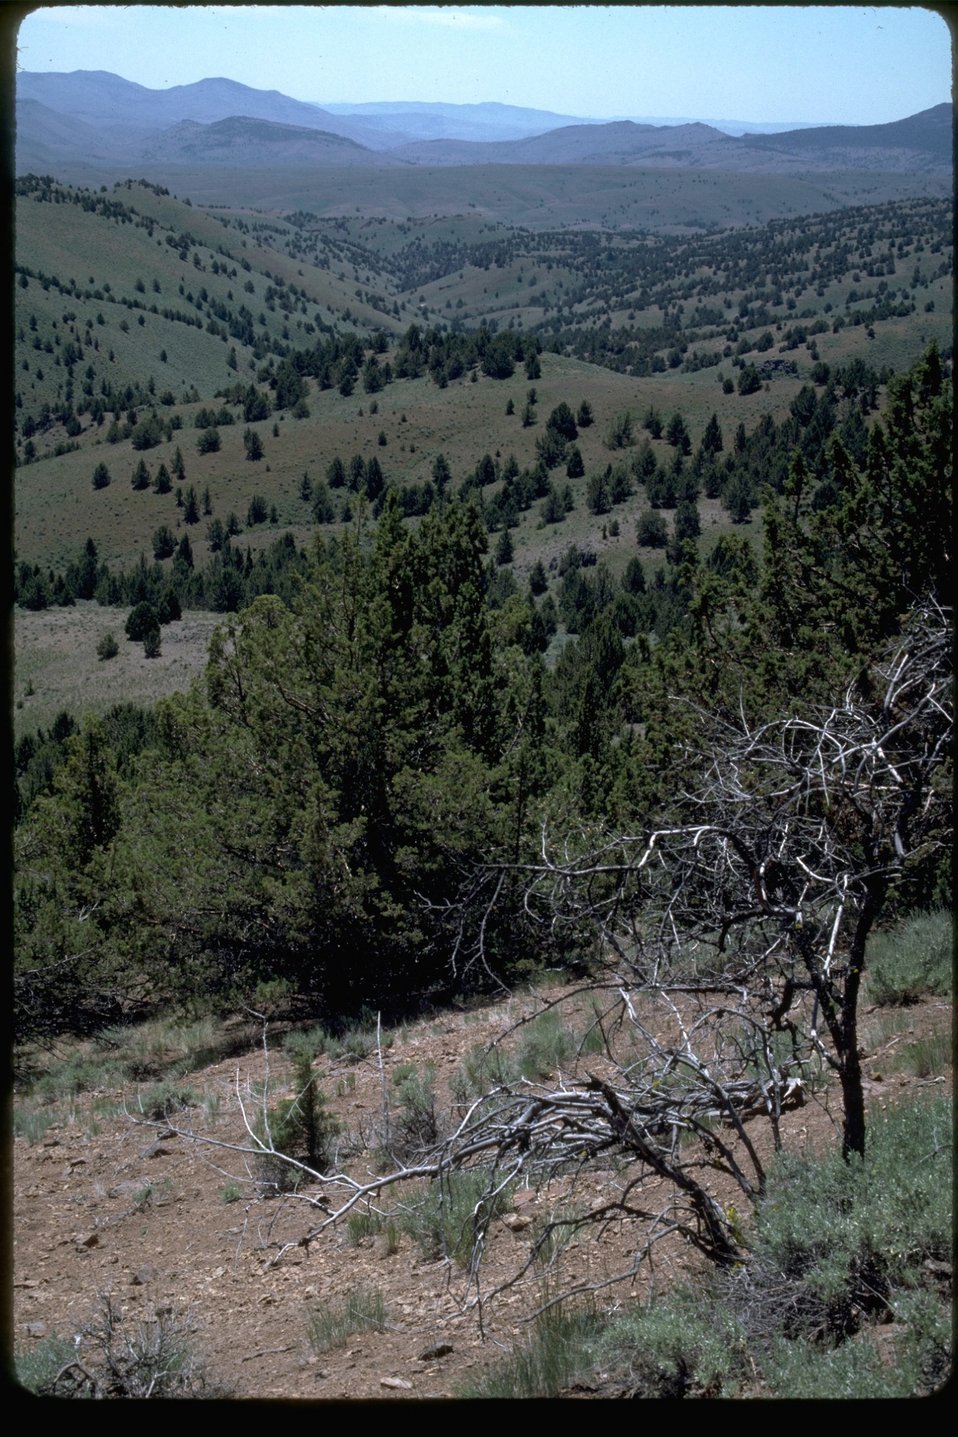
Beaver Dam Creek and Goading Creek. WSA OR 3-27.